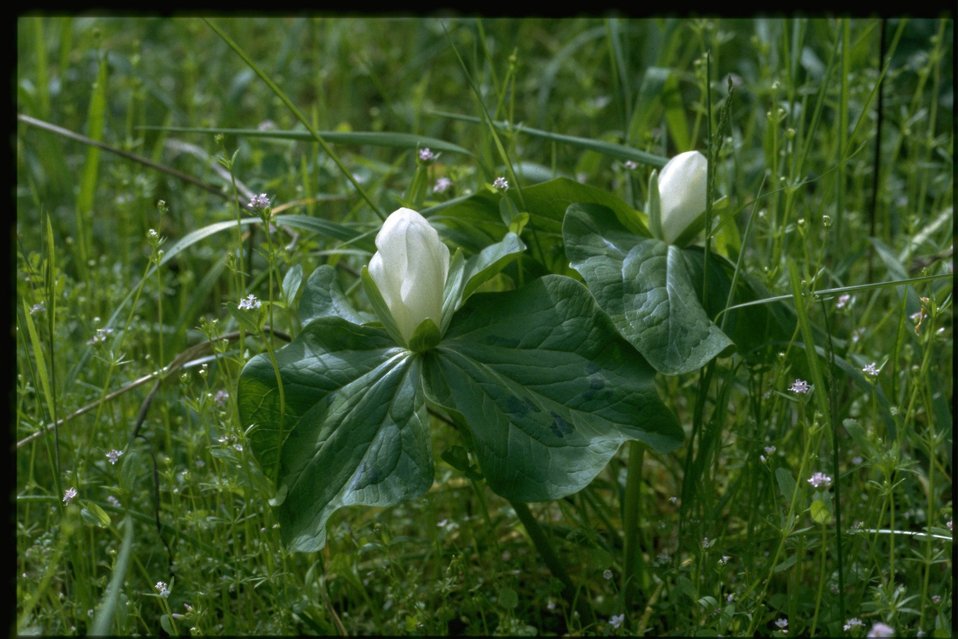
Medium shot of Trillium albidum.